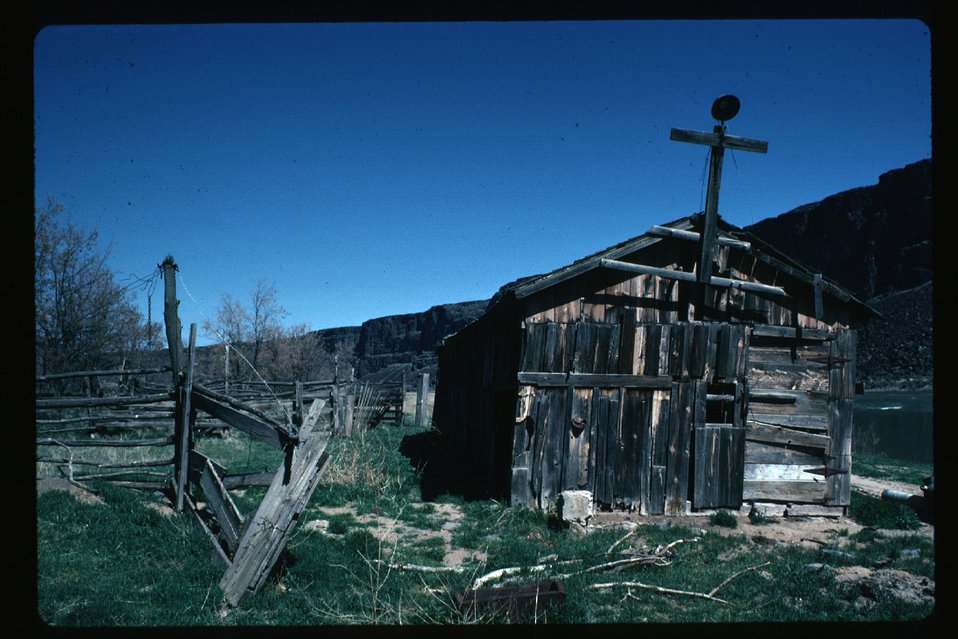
Preist Ranch Archeology LSRD Lower Snake River District